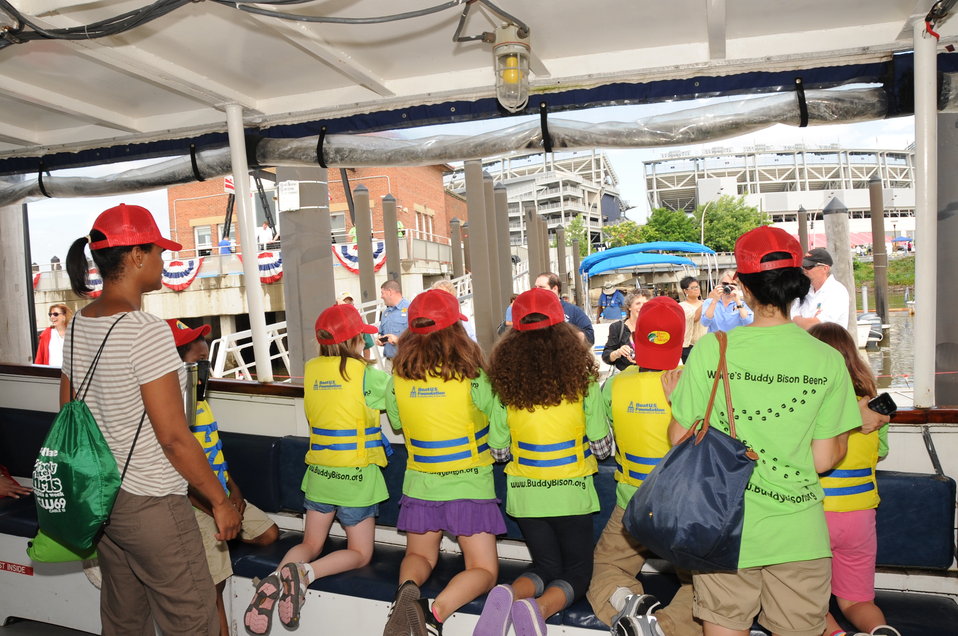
2013 National Fishing and Boating Week

Local students prepare to enjoy fishing at the annual kick-off of National Fishing and Boating Week on the Anacostia River in Washington D.C.